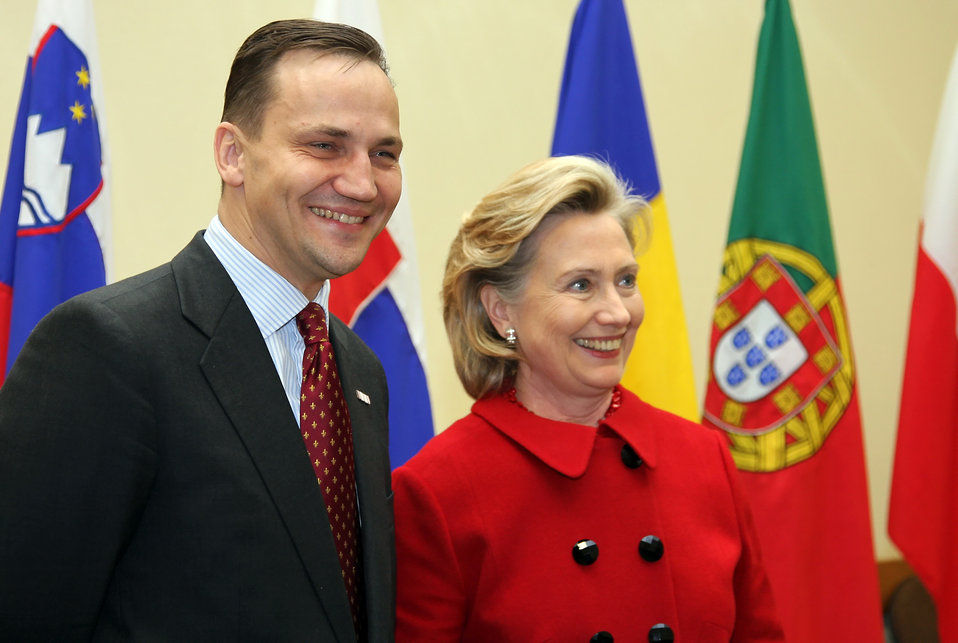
Secretary Clinton Meets With Polish Foreign Minister

U.S. Secretary of State Hillary Rodham Clinton holds a bilateral meeting with Polish Foreign Minster Radoslaw Sikorski in Brussels, Belgium December 4, 2009.